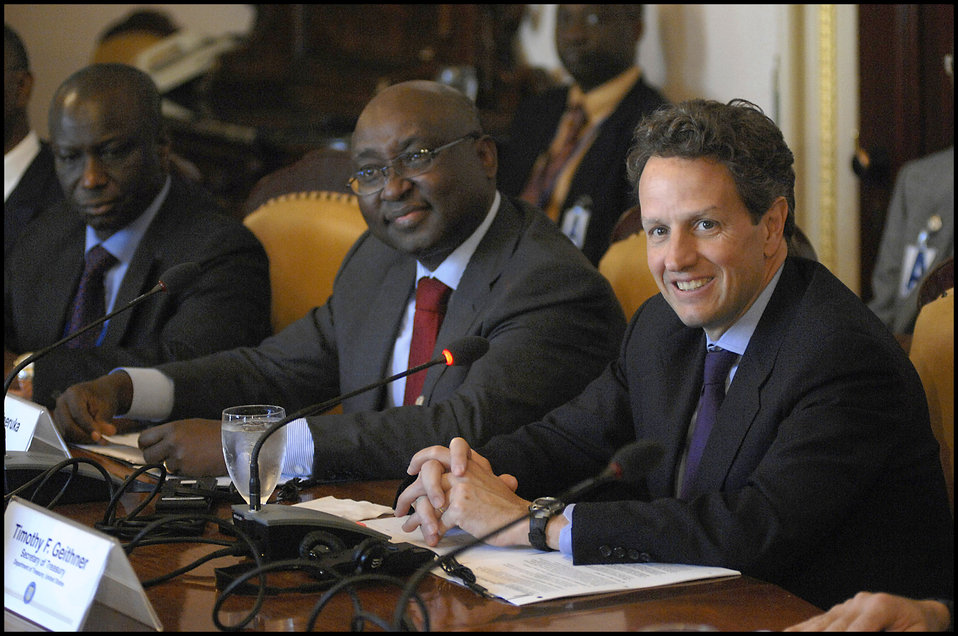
Roundtable with African Ministers

On April 25, 2009, Secretary Geithner hosted a roundtable with African Ministers at Treasury.